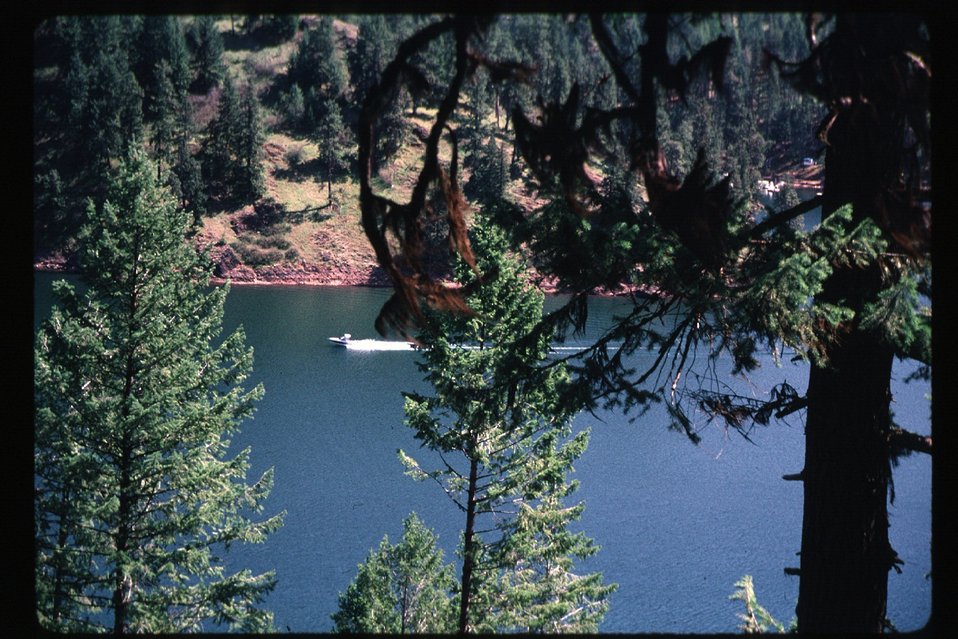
Lake Jet Boat Forestry Couer d'Alene Field Office UCSC Upper Columbia Salmon Clearwater